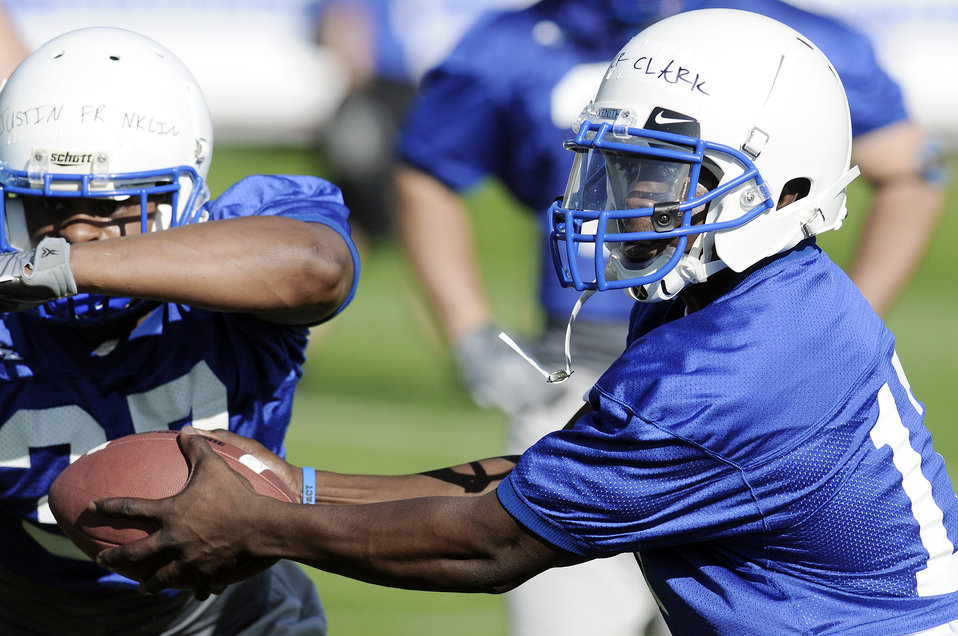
Academy football drills

Air Force Academy sophomore Asher Clark hands off the ball on day 2 of football practice Aug. 4 at the U.S. Air Force Academy near Colorado Springs, Colo. Clark is competing for the starting quarterback position with fellow sophomores Tim Jefferson and Connor Dietz.